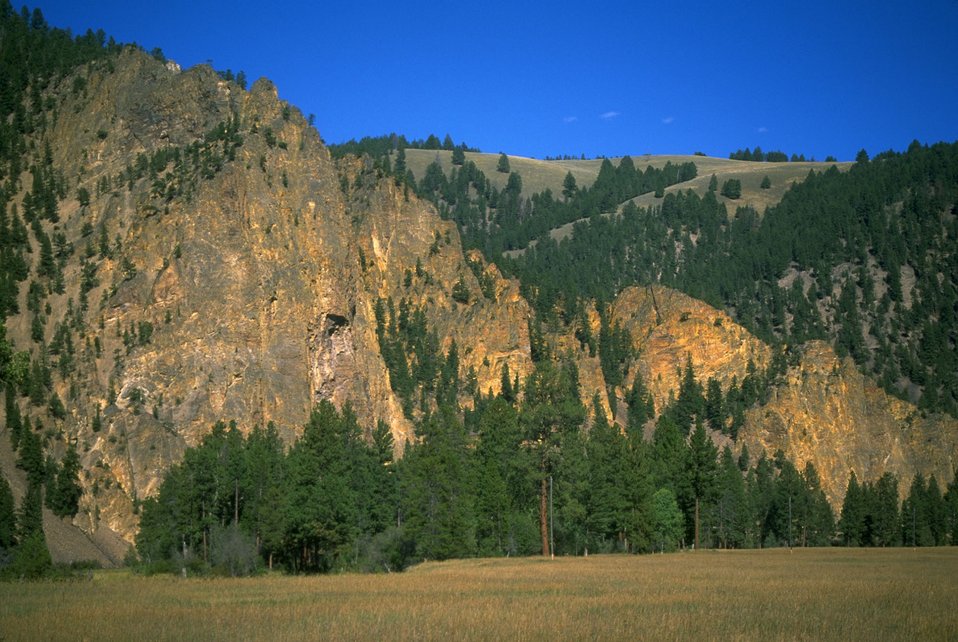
Squaw Rock ACEC (area of critical environmental concern)